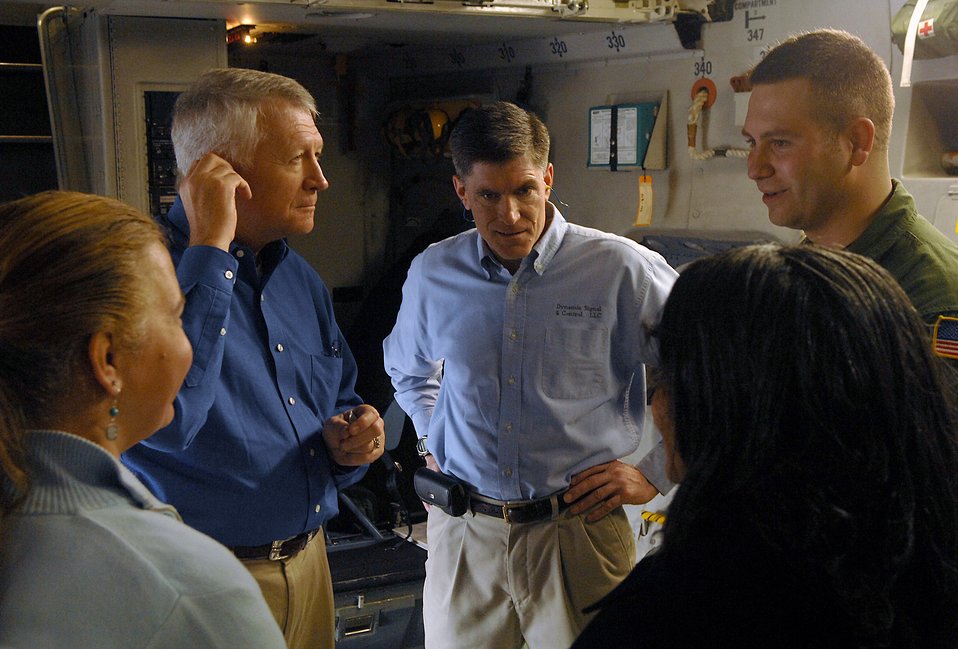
Show of force

Charleston civic leaders get a tour of the C-17 Globemaster III during a strategic brigade airdrop exercise involving a 13-ship formation Dec. 18 from Charleston Air Force Base, S.C. C-17s must be able to meet the Army's goal of airdropping a brigade's worth of troops and equipment (about 3,250 Soldiers and 3,450 tons of equipment). This multiship training demonstrates the teamwork of active-duty Airmen, reservists and civilians to be mission ready when the nation needs this critical capability.